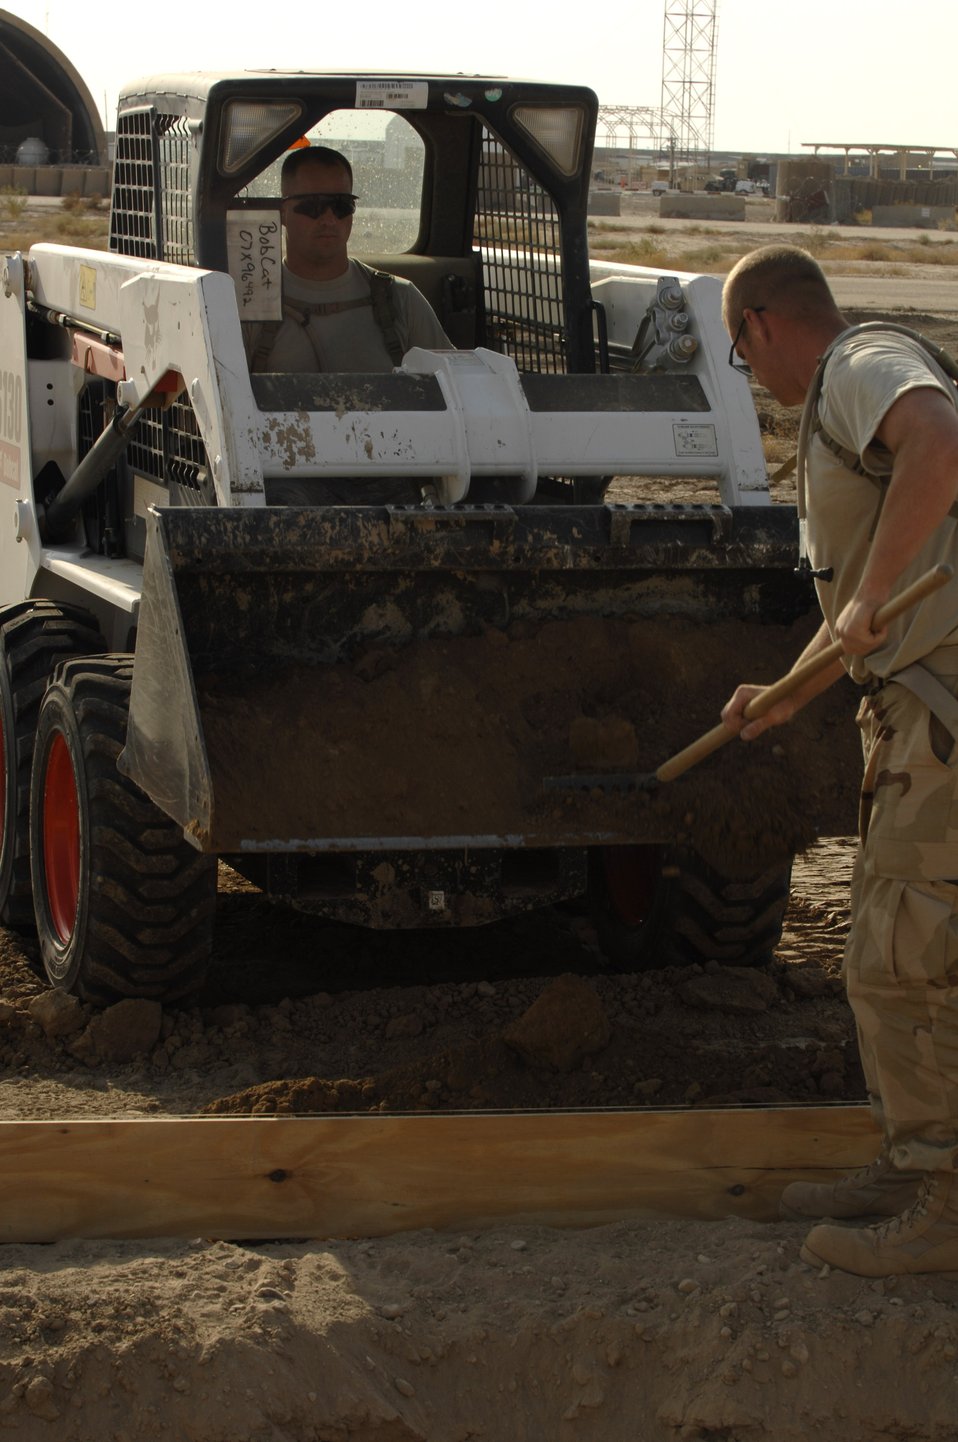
Down and Dirty

Tech. Sgt. Andrew Ferguson positions his loader so Senior Airman Mathew Mcdearmon can easily spread dirt Oct. 3 to help hold a wooden form in place prior to pouring a concrete footer for sun shades being installed on the Ali Base, Iraq, flightline. Sergeant Ferguson and Airman Mcdearmon and other Airmen in the 407th Civil Engineer Squadron are working around the clock to build the sun shades by November.